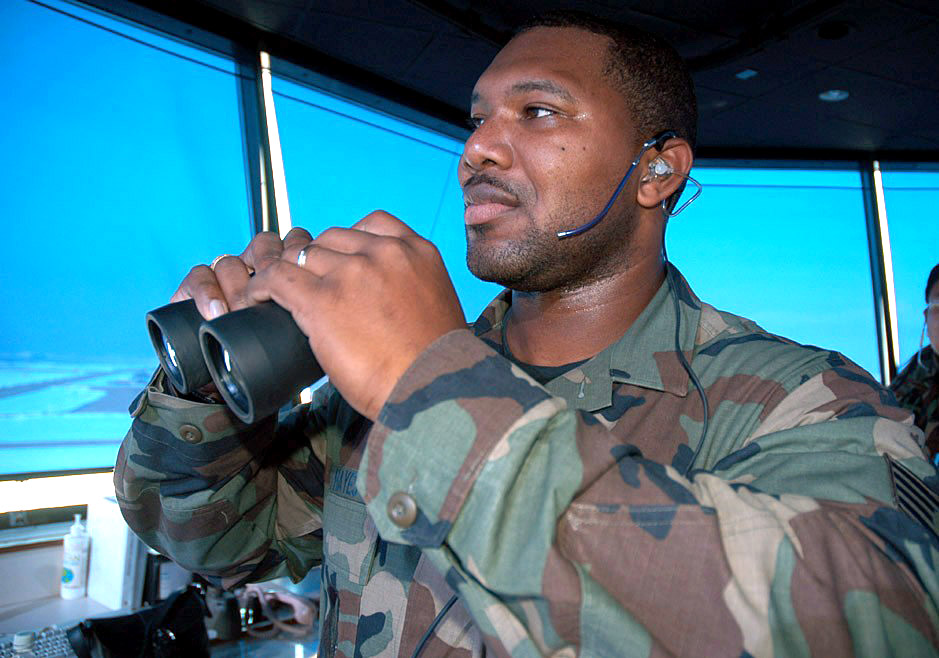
Hayes family

SAVANNAH, Ga., (AFPN) -- Staff Sgt. Herbert Hayes Jr. controls traffic at Kunsan Air Base, South Korea. While he was there, his family had to flee Keesler Air Force Base, Miss., before Hurricane Katrina struck. He had to return to the United States on emergency leave to help his displaced family recover.